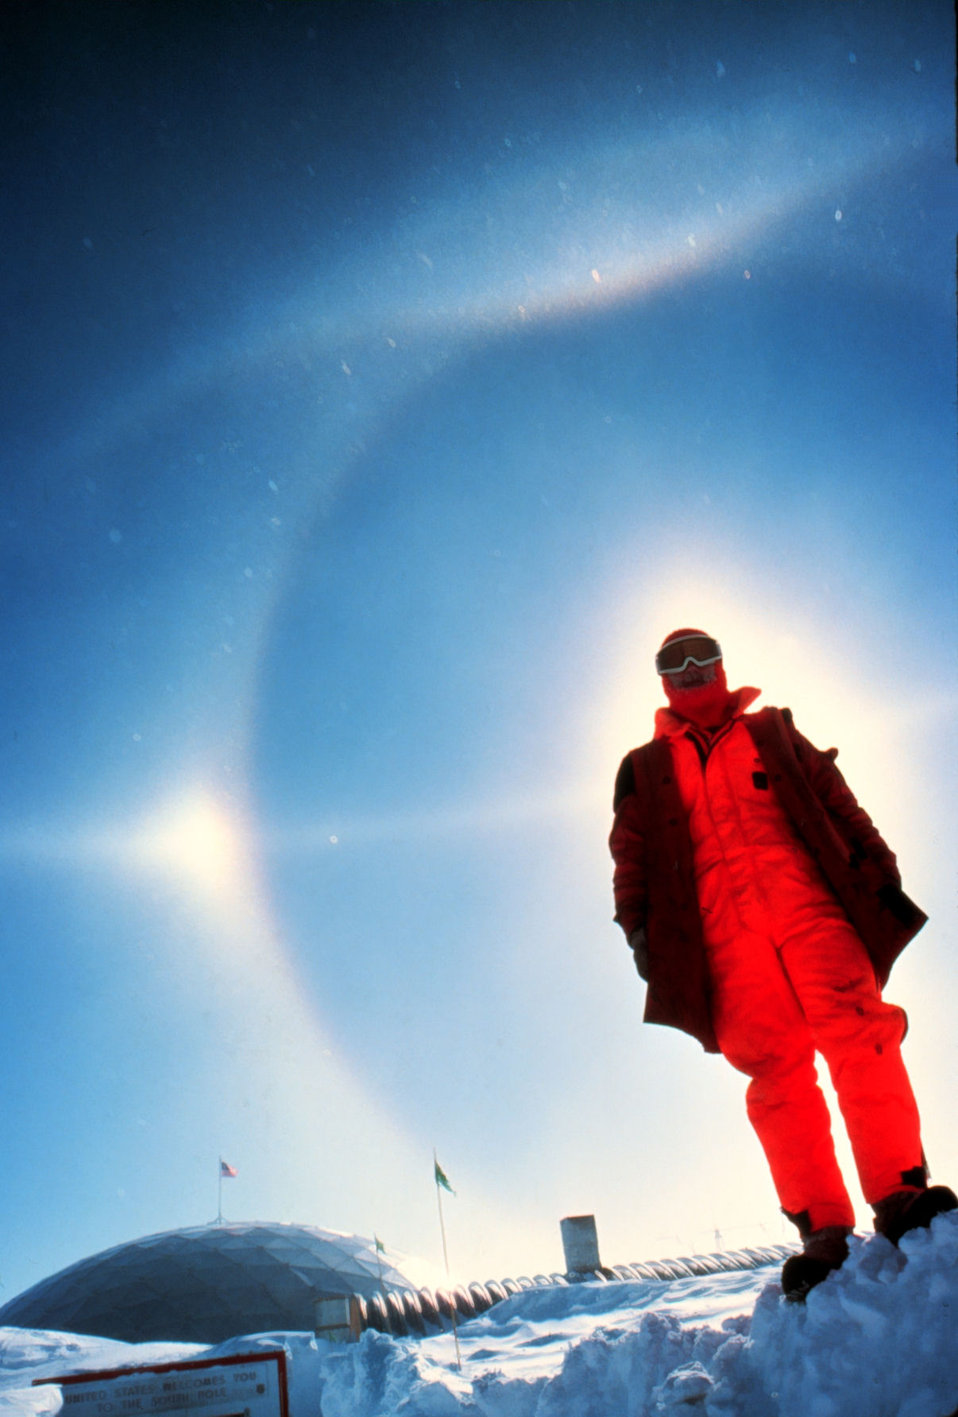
A magnificent halo South Pole Station is visible in the background